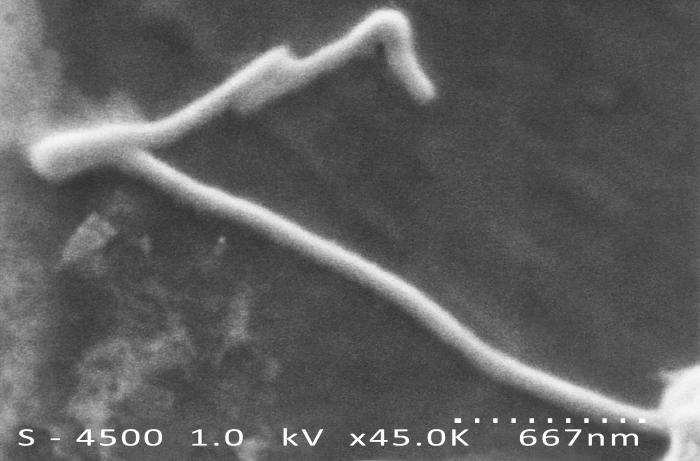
Created by CDC microbiologist Charles Humphrey, this scanning electron micrograph (SEM) revealed some of the ultrastructural morphologic features displayed by the Ebola virus discovered from the Ivory Coast of Africa.